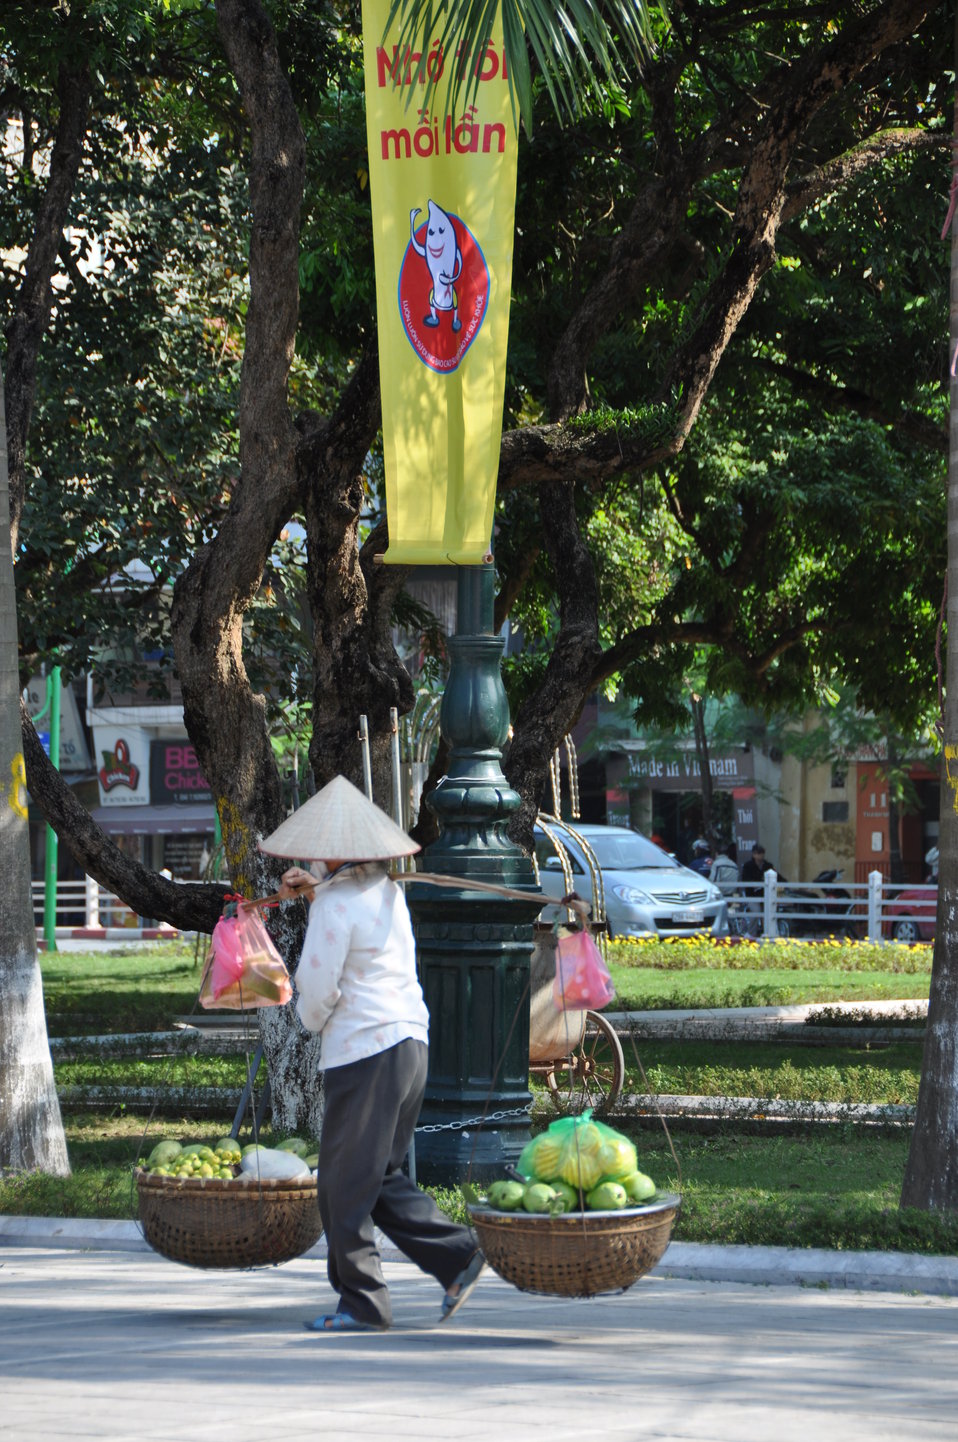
100% Condom Use Campaign Launch, Dec. 2, 2011